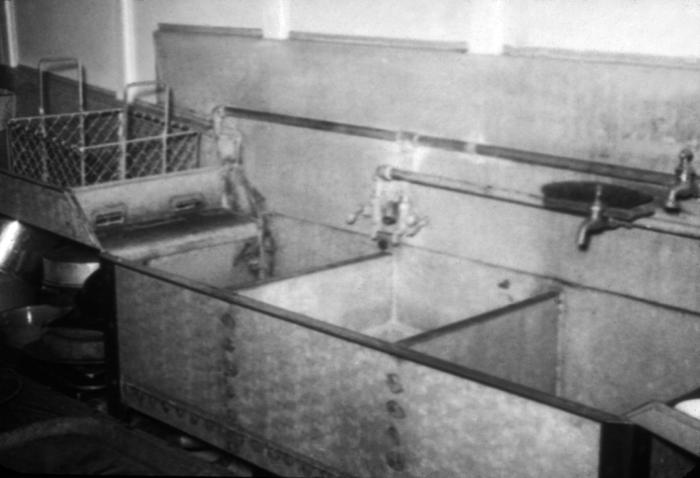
This historic 1950s photograph depicted an example of how research into sanitation was put into practice. The image depicted a three-compartment stainless steel sink used for washing, rinsing, and the sanitization of restaurant dishes.